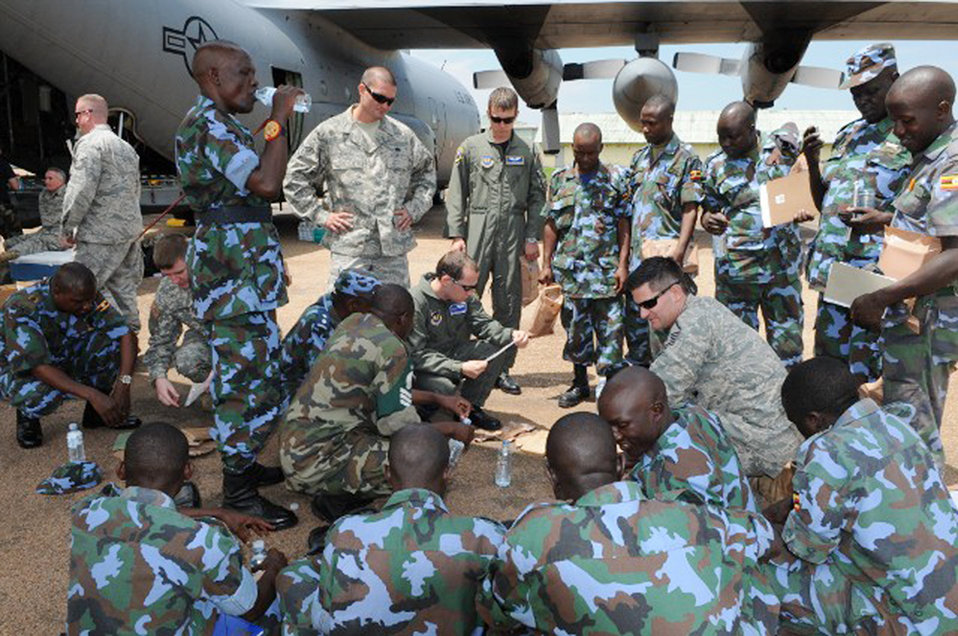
17th Air Force Airmen enhance Ugandan humanitarian airlift capability

Staff Sgt. Josh Woolridge and Master Sgt. Garrick Lewis explain how to prepare meals-ready-to-eat to members of the Ugandan peoples defense forces during a theater security cooperation event Aug. 26. Sergeant Woolridge is a 37th Airlift Squadron loadmaster at Ramstein Air Base, Germany. Sergeant Lewis is a drop zone support lead for 17th Air Force at Ramstein AB.